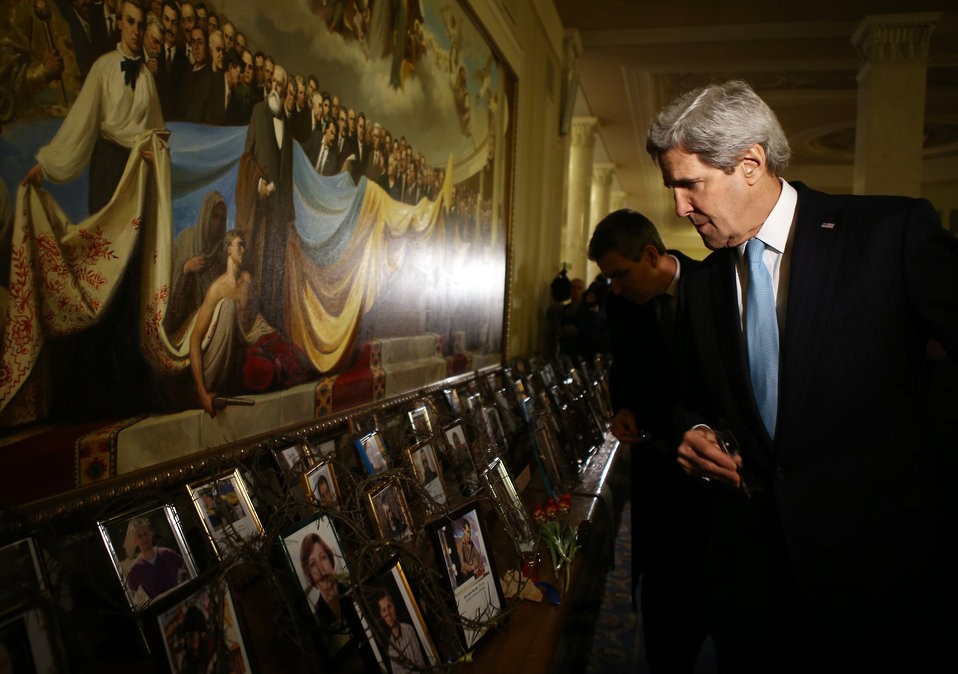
Secretary Kerry Views Photos of Those Killed at Maidan

U.S. Secretary of State John Kerry looks at the photos of those killed at Maidan, at the Verkhovna Rada in Kyiv, Ukraine, on March 4, 2014.